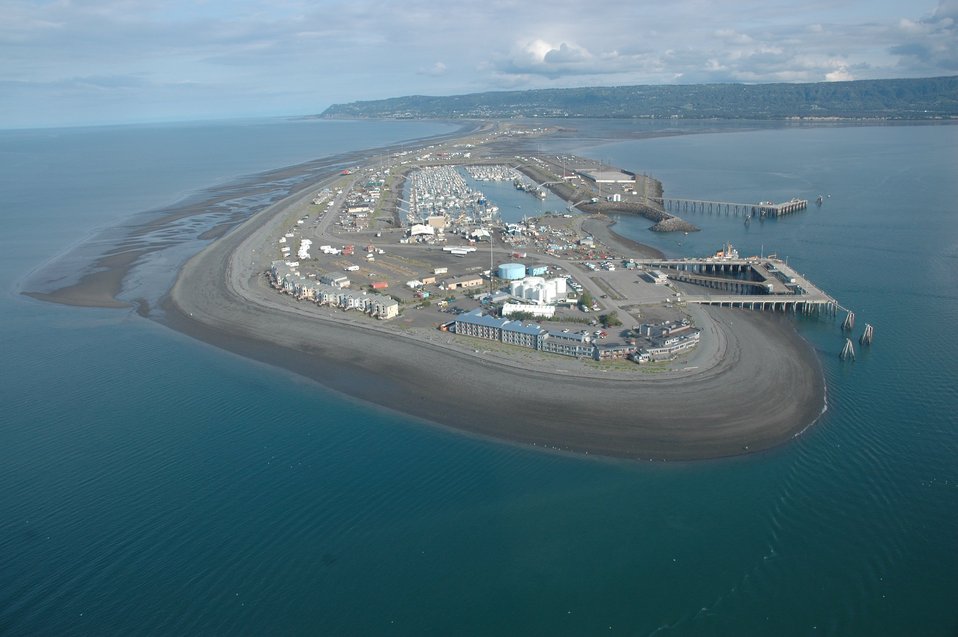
Aerial photograph. The Coast Guard base and piers at Homer Spit.